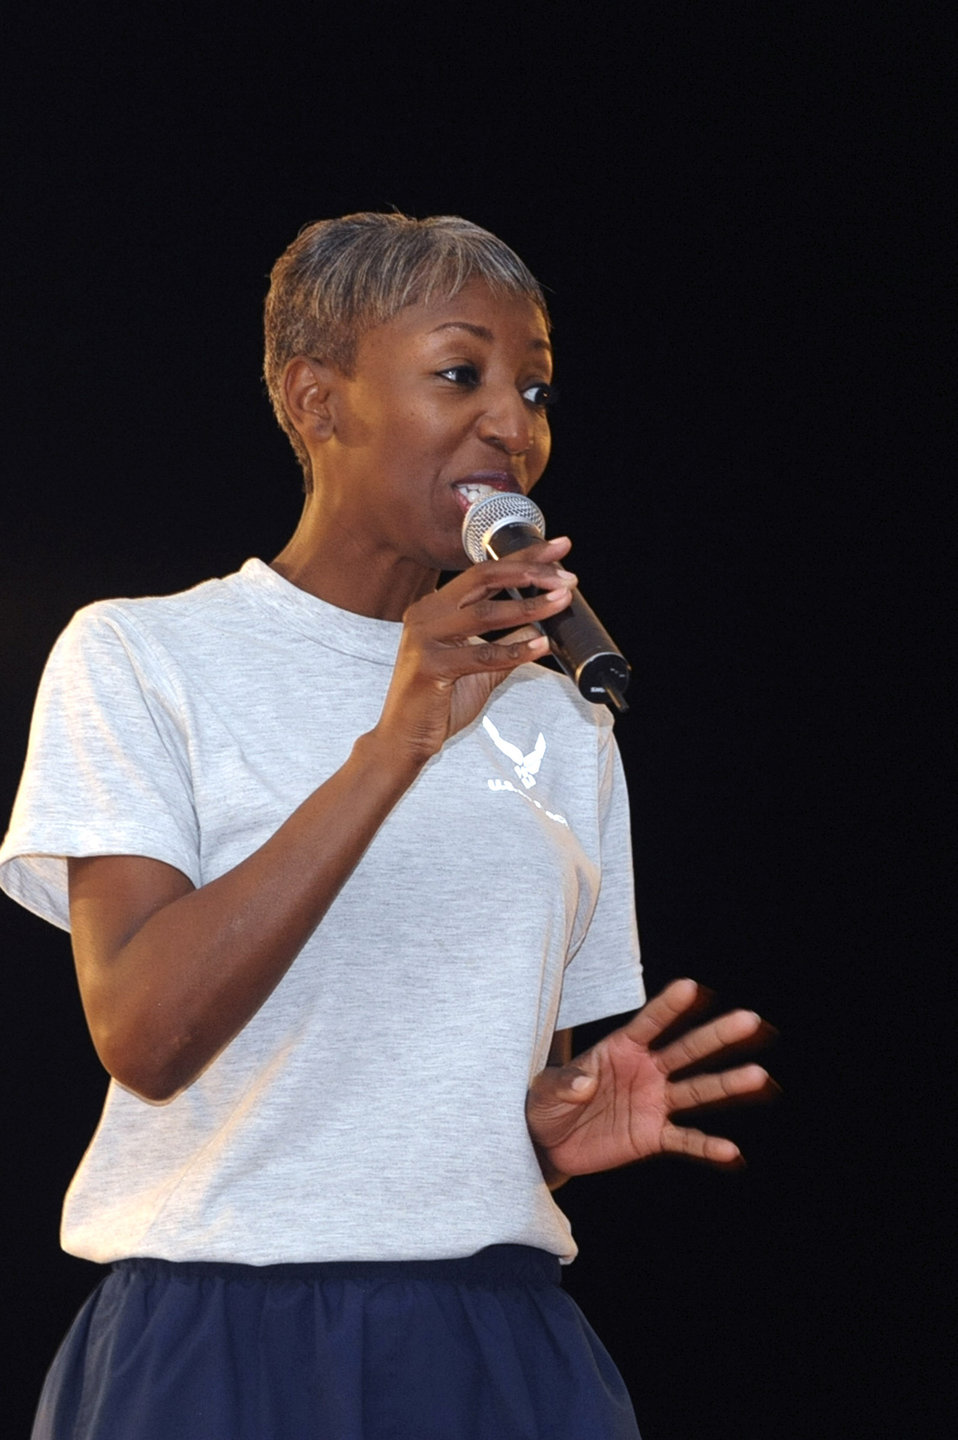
Step it up

Maj. Sharon Walker performs a rendition of Natalie Cole's